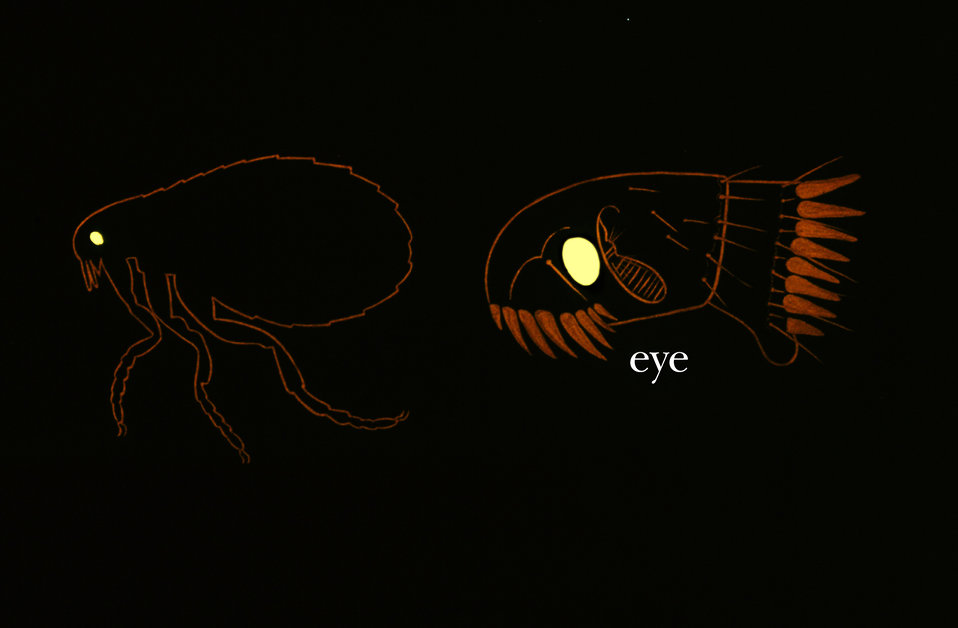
This illustration shows the location of the eye in the head segment of some species of fleas.